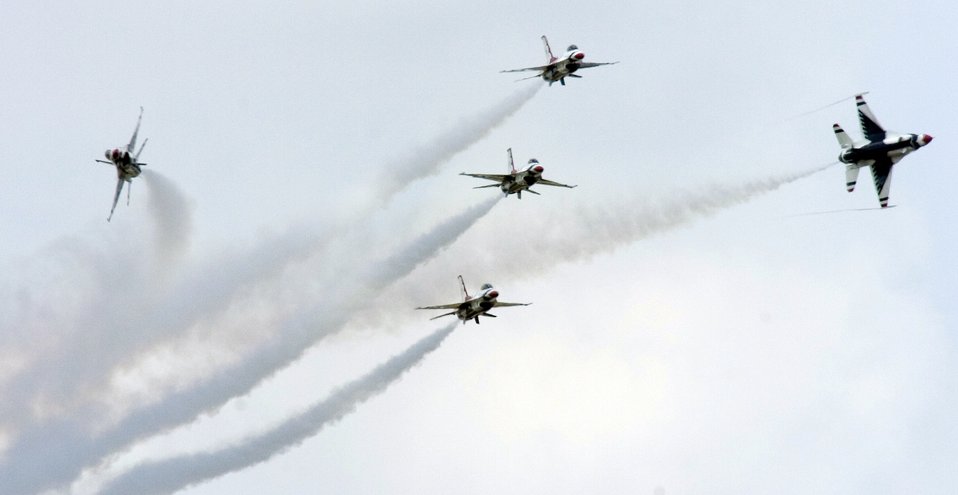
Thunderbirds

The USAF Thunderbirds break for a